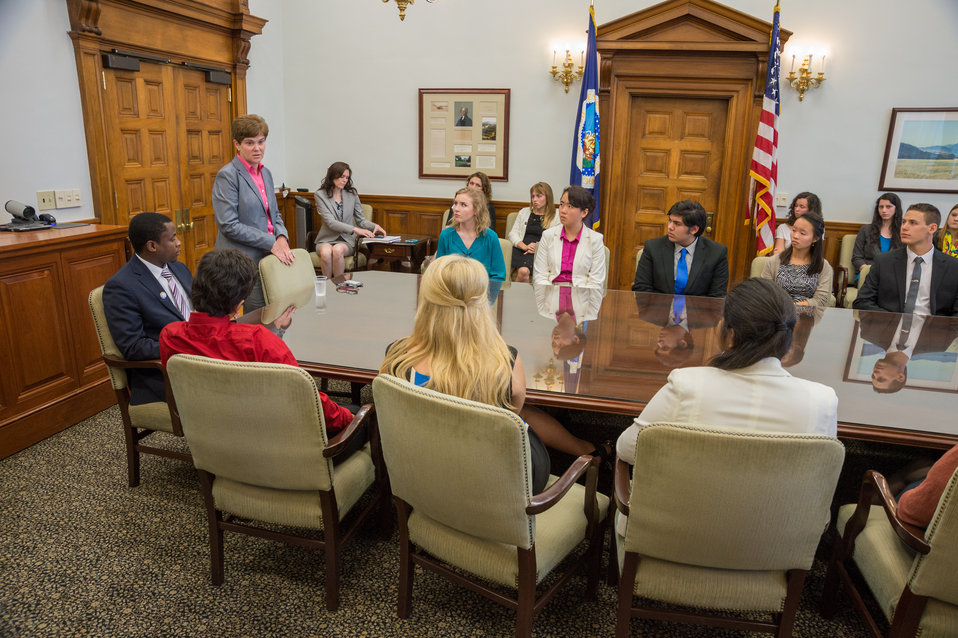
Agriculture Deputy Secretary Krysta Harden met with members of the Wallace-Carver Fellowship Leadership Symposium at the United States Department of Agriculture (USDA) in Washington, DC, Tue. Jun. 17, 2014. The theme of the 2014 Wallace Carver Fellowship is, “The Single Greatest Challenge in Human History-Sustainable Feeding Nine Billion People by 2050.” The Wallace-Carver Fellowship offers high school and college students the opportunity to collaborate with world-renowned scientists and policymakers through paid internships at leading USDA research centers and offices across the United States. Fulfilling the shared vision of Agriculture Secretary Tom Vilsack and World Food Prize founder Dr. Norman Borlaug of inspiring the next generation of American scientific and humanitarian leaders, the USDA and the World Food Prize Foundation partnered to create the Wallace-Carver Fellowship.